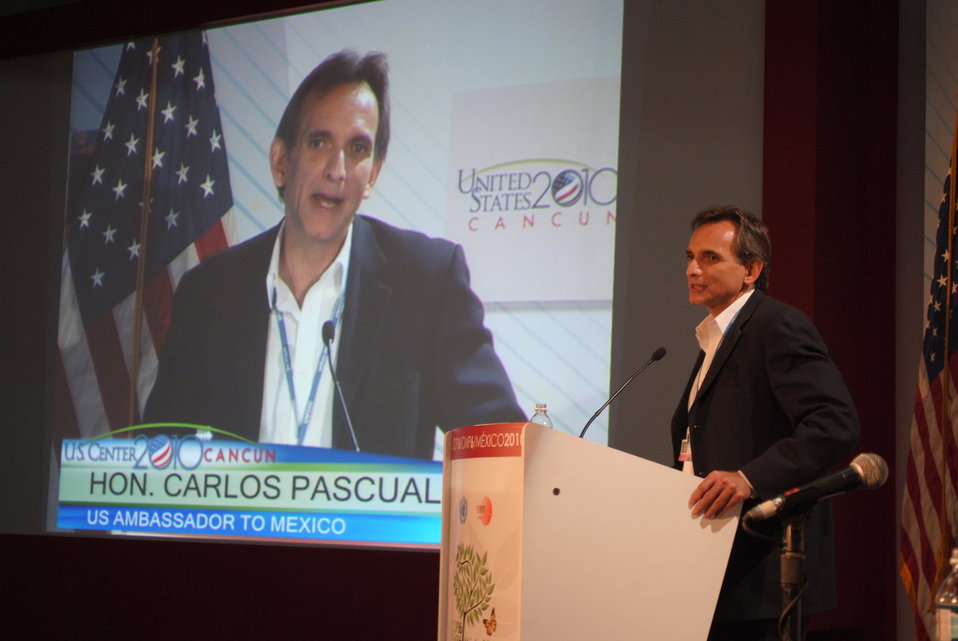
Ambassador Pascual Introduces Secretary Vilsack

U.S. Ambassador to Mexico Carlos Pasucal introduces U.S. Secretary of Agriculture Tom Vilsack at the U.S. Center at COP-16 in Cancun, Mexico, on December 9, 2010.